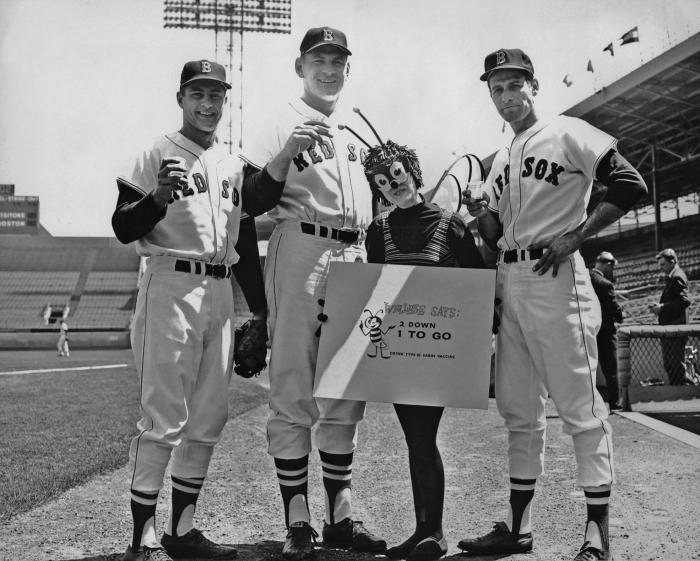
This 1963 photograph shows CDC's Wellbee, a cartoon character who was created to personify "good public health," at Fenway Park with Boston Red Sox Team members: (left to right) Bill Monbouquette, pitcher; Dick "The Monster" Radatz, relief pitcher; and Eddie Bressoud, shortstop.